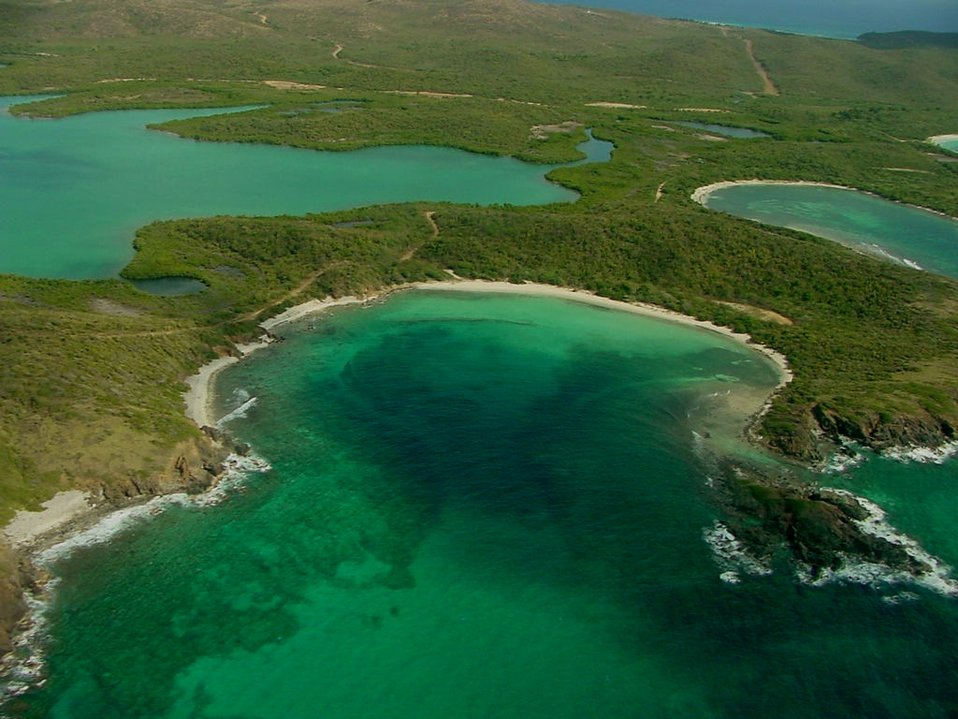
Vieques NWR

The secluded and undeveloped beaches of Vieques National Wildlife Refuge off the coast of Puerto Rico have been called some of the most beautiful in the world.